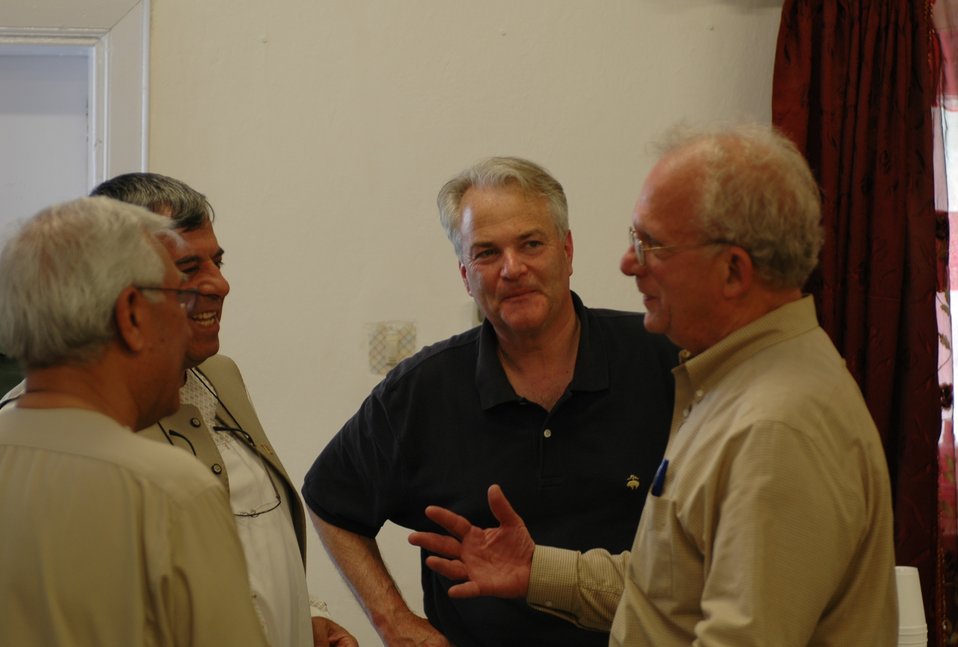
CODEL Berman